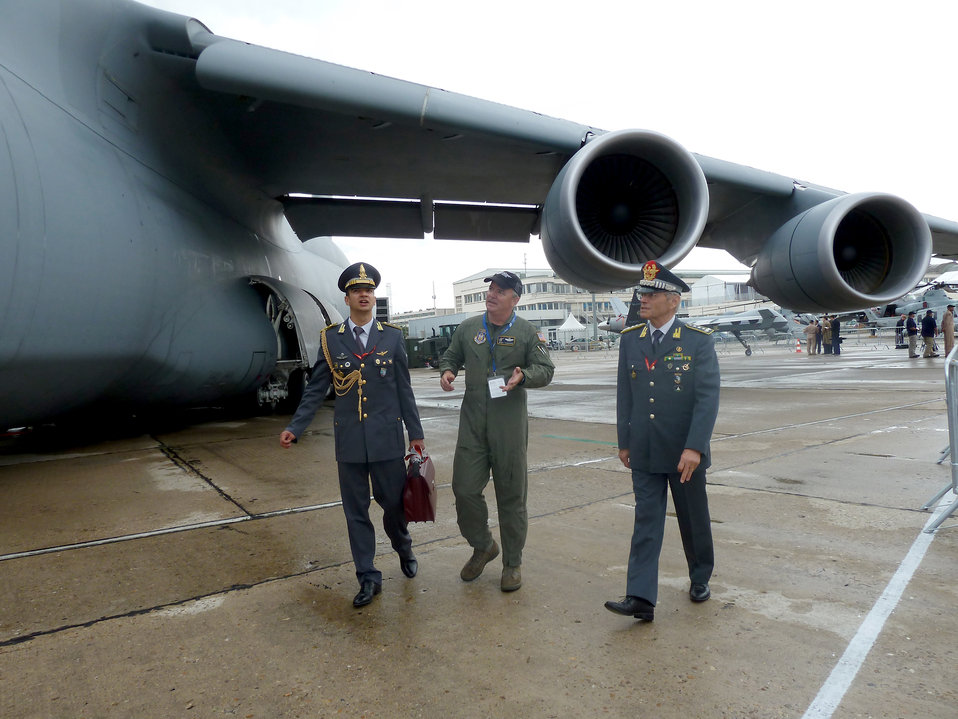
Paris Air Show

Lt. Col. Mark Alderson (center) discusses the capabilities of the C-5M Super Galaxy with members of the Italian army June 20, 2011, during the 49th International Paris Air Show at the Le Bourget Airport in Paris. Colonel Alderson is a pilot assigned to the 709th Airlift Squadron at Dover Air Force Base, Del.